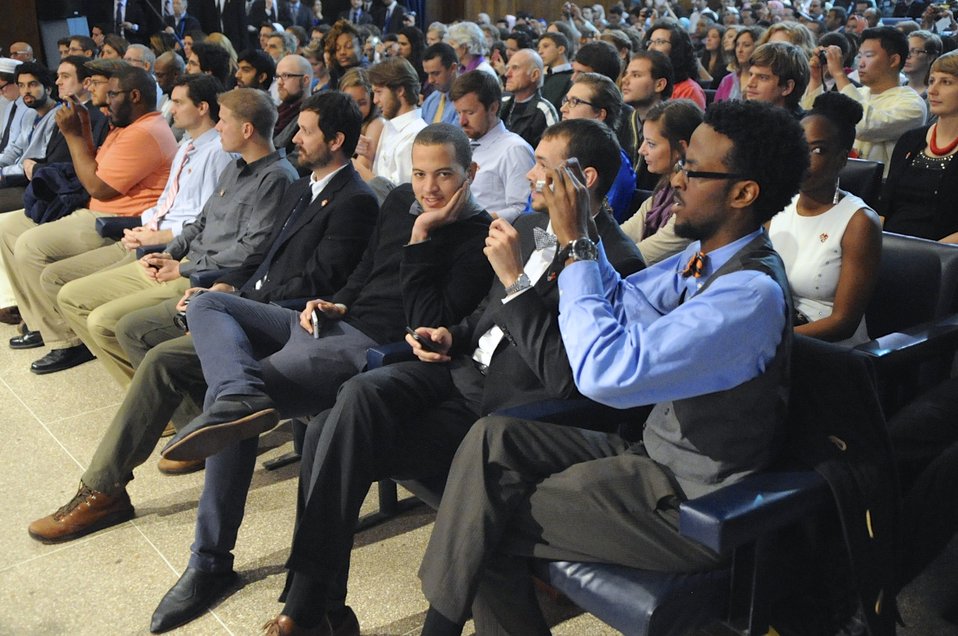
Peace Corps Volunteers Wait Prior to Secretary Kerry Address In Morocco

Over 100 new Peace Corps volunteers wait to be sworn in by U.S. Secretary of State John Kerry in a ceremony in Rabat, Morocco, on April 4, 2014.